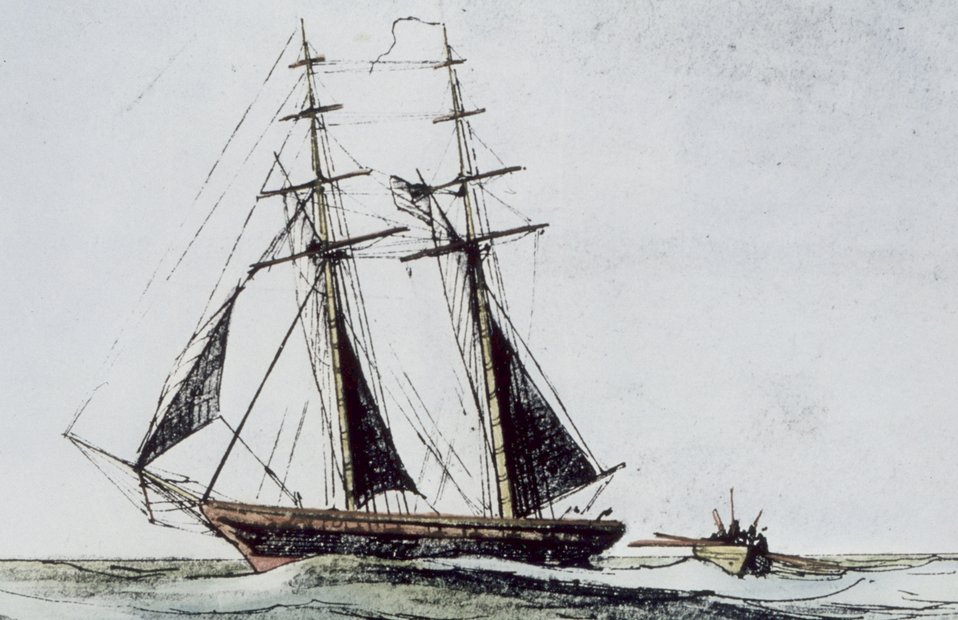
Coast Survey Schooner EXPERIMENT. In service 1835-1839. Sounding boat